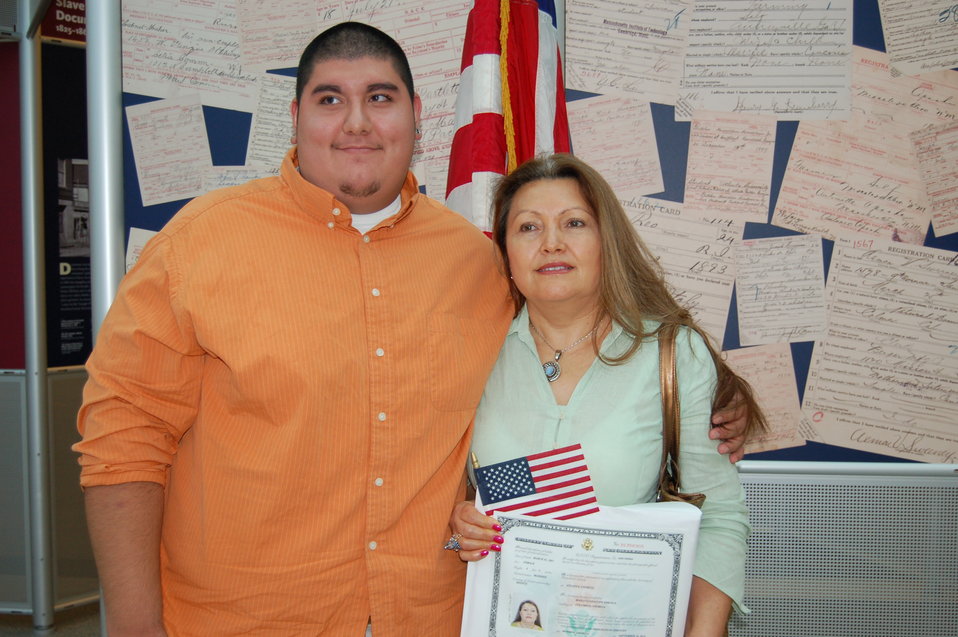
New Citizens